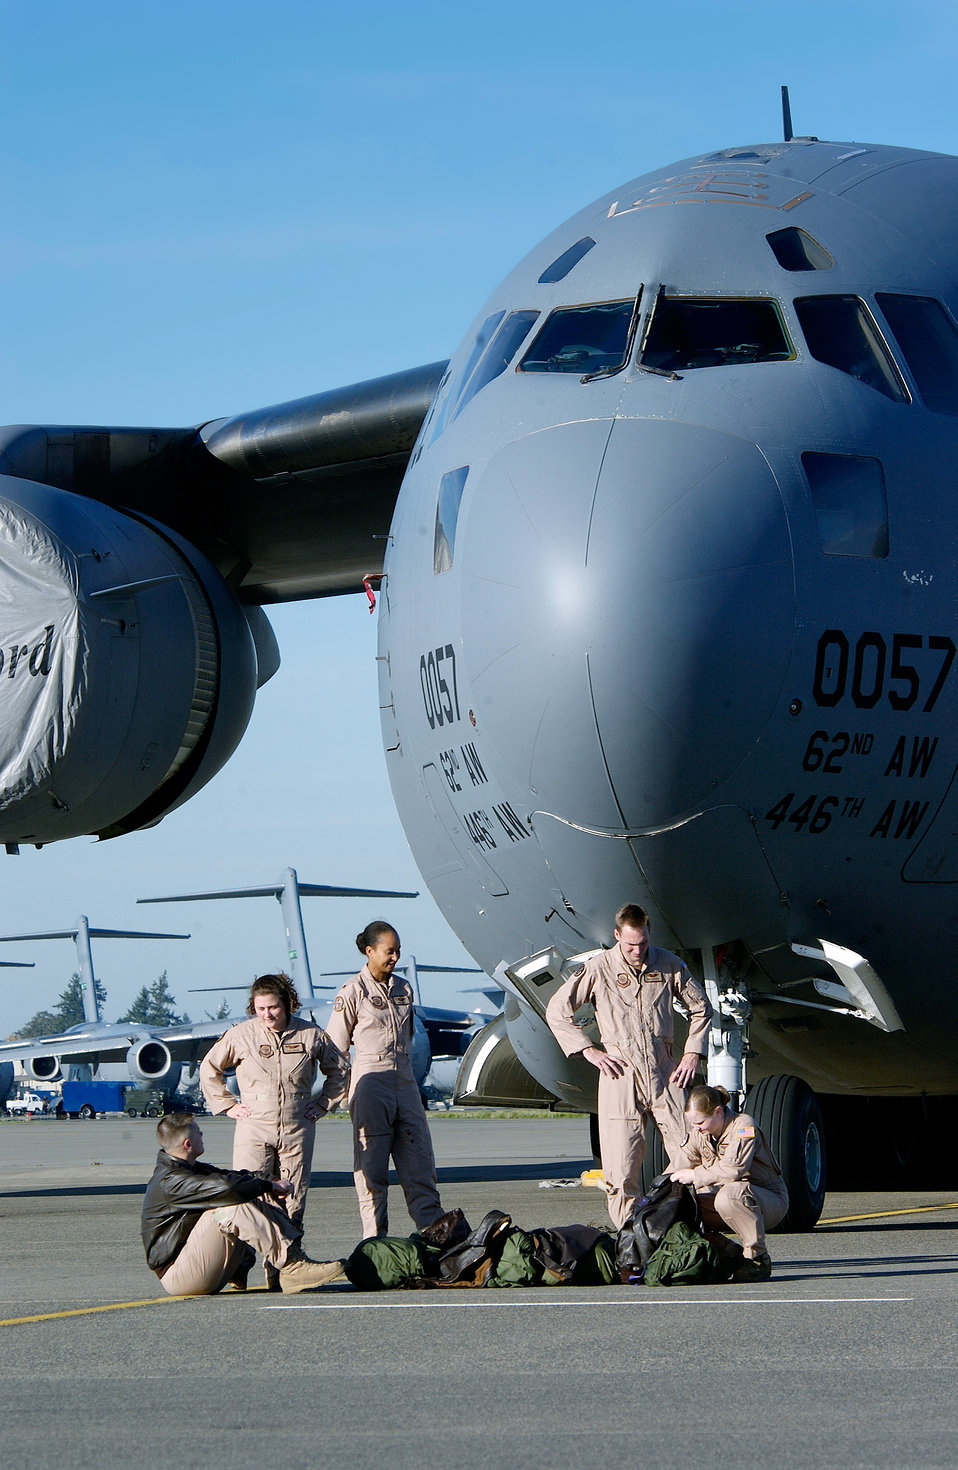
Reserve unit begins deactivating

MCCHORD AIR FORCE BASE, Wash. -- Mixed active-duty and Reserve aircrews wait for their crew bus. C-17 Globemaster III aircrews from the 62nd and 446th Airlift Wings fly long missions from here to staging areas like Rhein-Main Air Base, Germany, from where they fly missions into and out of Iraq and Afghanistan.